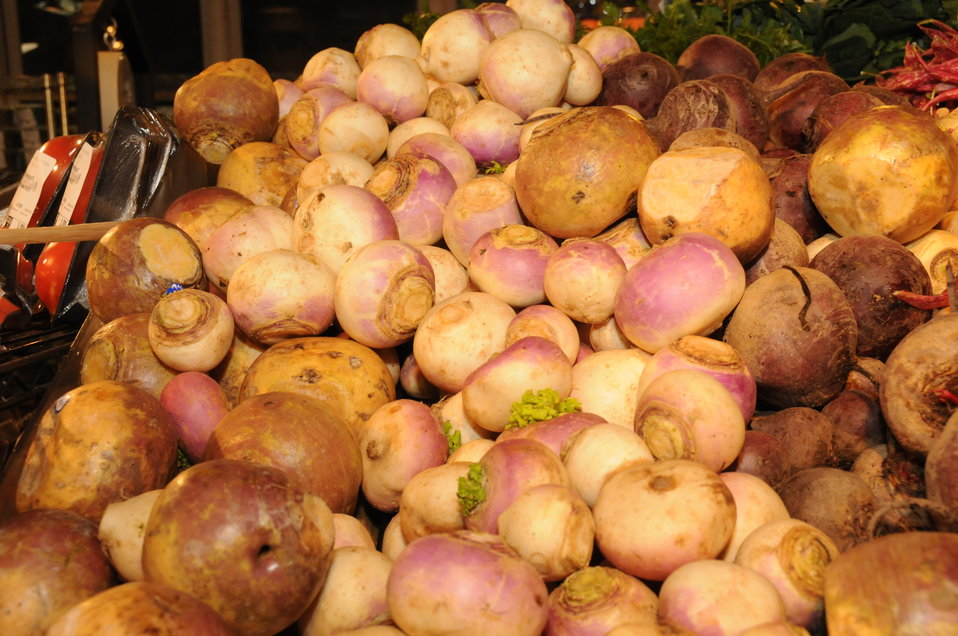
The Reading Terminal Market offers produce fresh from the field to the people of Philadelphia, PA on April 3, 2009. There are Amish specialties, fruits, vegetables, meats, seafood, and poultry. Reading Terminal Market opened for business in 1892 with approximately 78,000 square feet and almost 800 spaces for vendors. The Market was revitalized in the 1990’s and today is still the gastronomic bazaar that its original planners had envisioned. Many of the historic Market stands survived the reconstruction and are once again filled with local produce, fresh eggs, milk, meats, poultry, seafood, handmade crafts, jewelry, and clothing. The Market is home to more than 80 merchants, two of whom are descendants of the original stand holders from a century before.